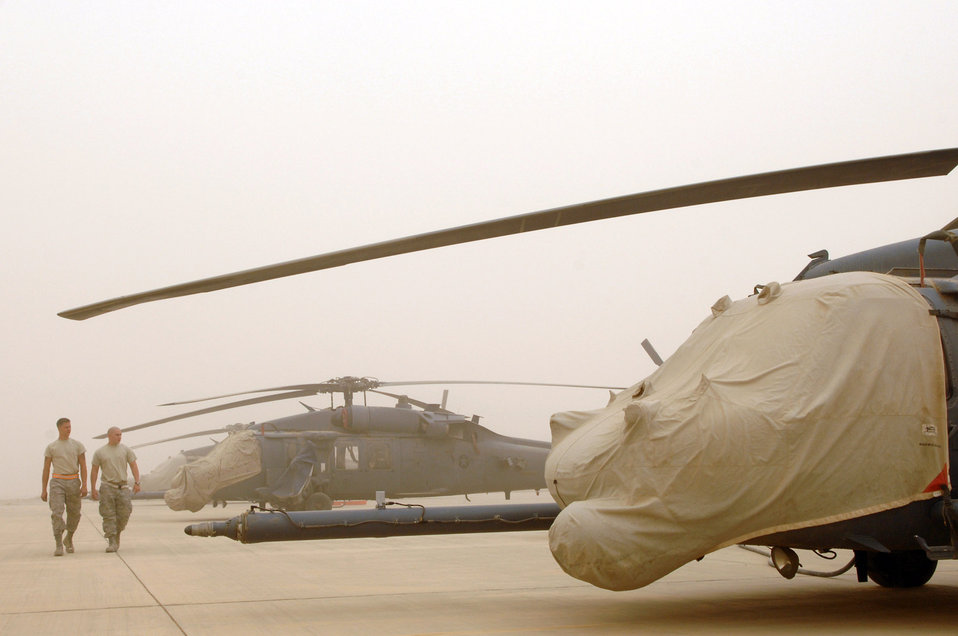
It's a 'shamal world' for combat weather Airmen

Airman 1st Class Jason Schwenn and Senior Airman Caleb Castillo walk through a row of HH-60G Pavehawk helicopters during a major dust storm April 17 at Joint Base Balad, Iraq. During extreme weather conditions, extra precautions are taken to protect aircraft from weather elements. Both Airmen are 64th Expeditionary Helicopter Maintenance Unit crew chiefs deployed from Moody Air Force Base, Ga.